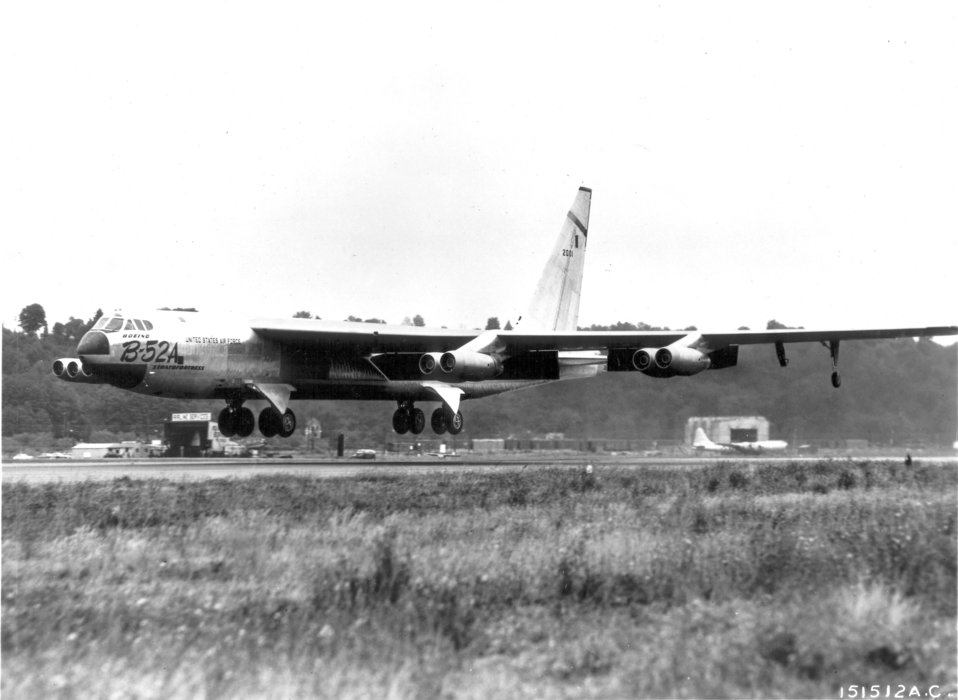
B-52A

1950's -- The 52-A Stratofortress, the first production model of a series of long range bombers, takes off from Boeing Field, Wash., on its maiden flight Aug. 5, 1954. It is powered by eight Pratt and Whitney Aircraft J-57 turbojet engines, each rated in 10,000 pounds of thrust class. The new bomber has a wing span of 185 feet, length of 156 feet, tail height of 48 feet and gross weight of more than 350,000 pounds.